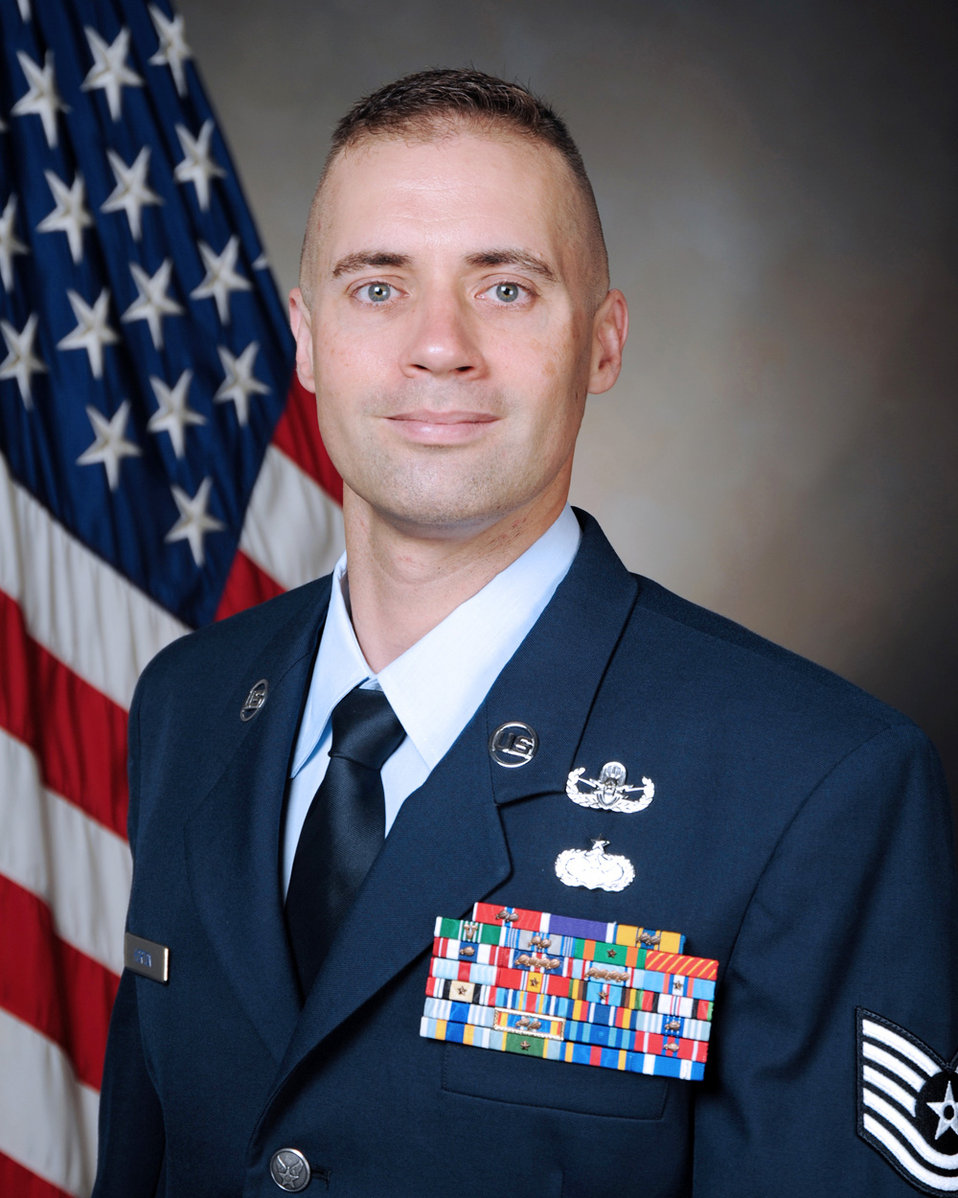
12 Outstanding Airmen of the Year named

Tech. Sgt. Benjamin Horton, an explosive ordnance disposal craftsman with the 775th Civil Engineer Squadron at Hill Air Force Base, Utah, was deployed to Kirkuk Air Base, Iraq. The 12 Outstanding Airmen of the Year are selected based on superior leadership, job performance, significant self-improvement/ personal achievements and base/community involvement. The Air Force Chief of Staff reviews the selections. The selections for the 2009 12 Outstanding Airmen of the Year were announced July 2 by Air Force officials at Randolph AFB, Texas.